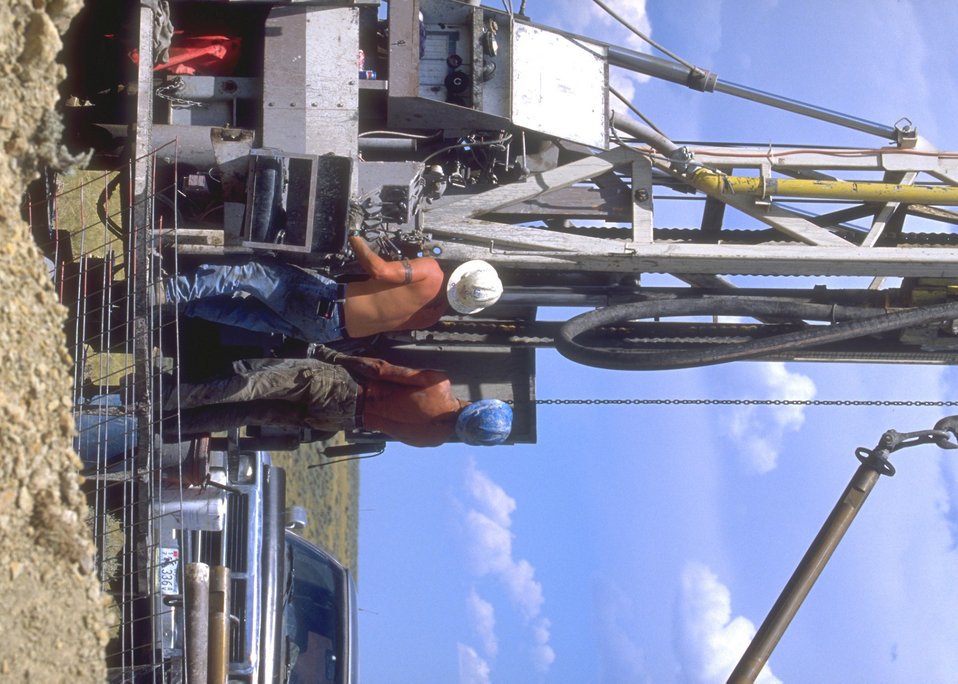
Drill site for coal bed methane, Buffalo Field Office.